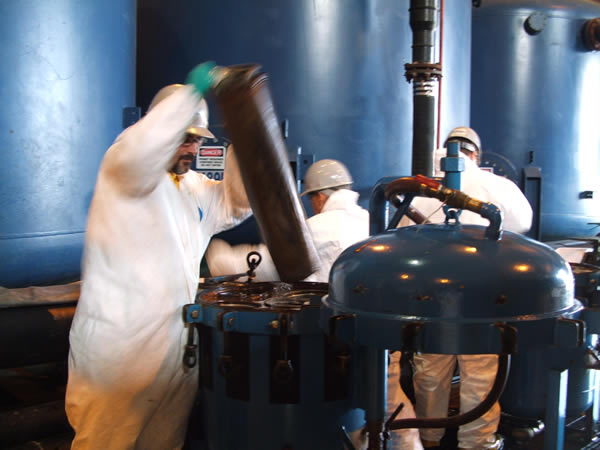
October 2009, Changing bag filters for water treatment